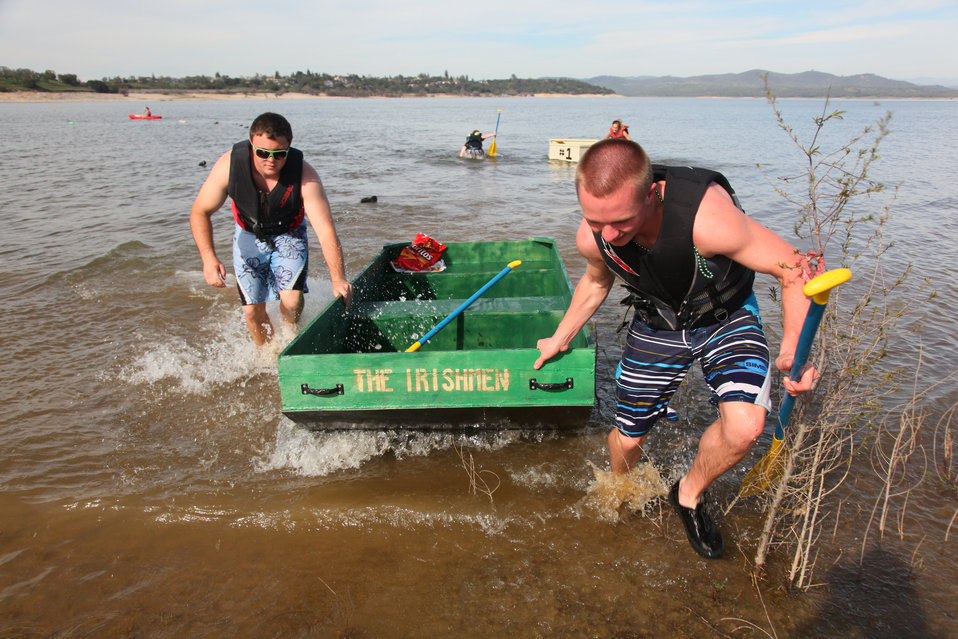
Judging Folsom High School's Cardboard/Plywood/Whatever Regatta

FOLSOM, Calif. (April 4, 2011) -- Student competitors complete a cross-lake sprint during Folsom High School’s Fourth Annual Cardboard/Plywood/Whatever Regatta at Beal’s Point State Park here April 1. Students from more than 20 physics and engineering classes at Folsom and Rancho Cordova High Schools competed to design and build boats, which were judged against design and performance criteria. Two U.S. Army Corps of Engineers Sacramento District engineers were volunteer judges for the competition.